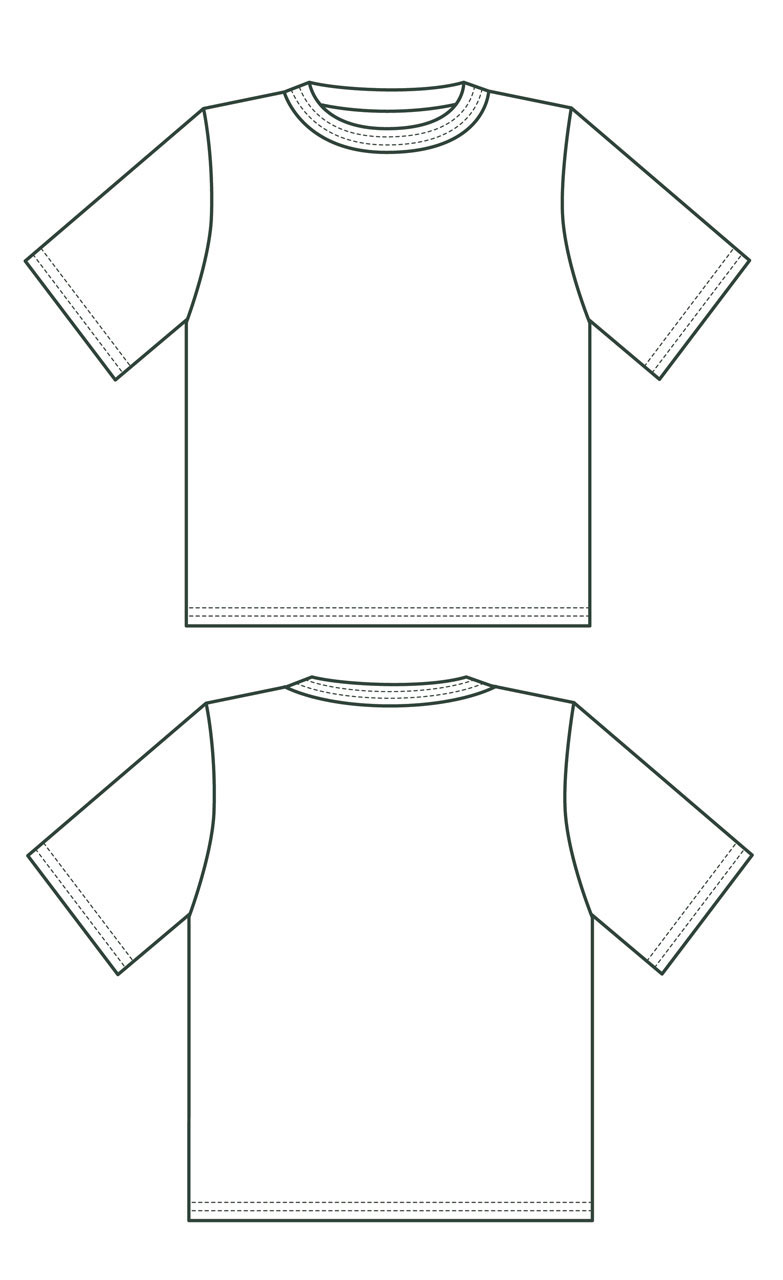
T shirt image

T shirts images that can be easily altered..